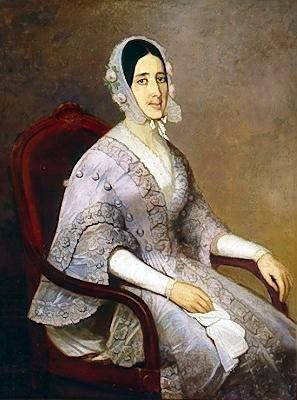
Barandier - Retrato de senhora